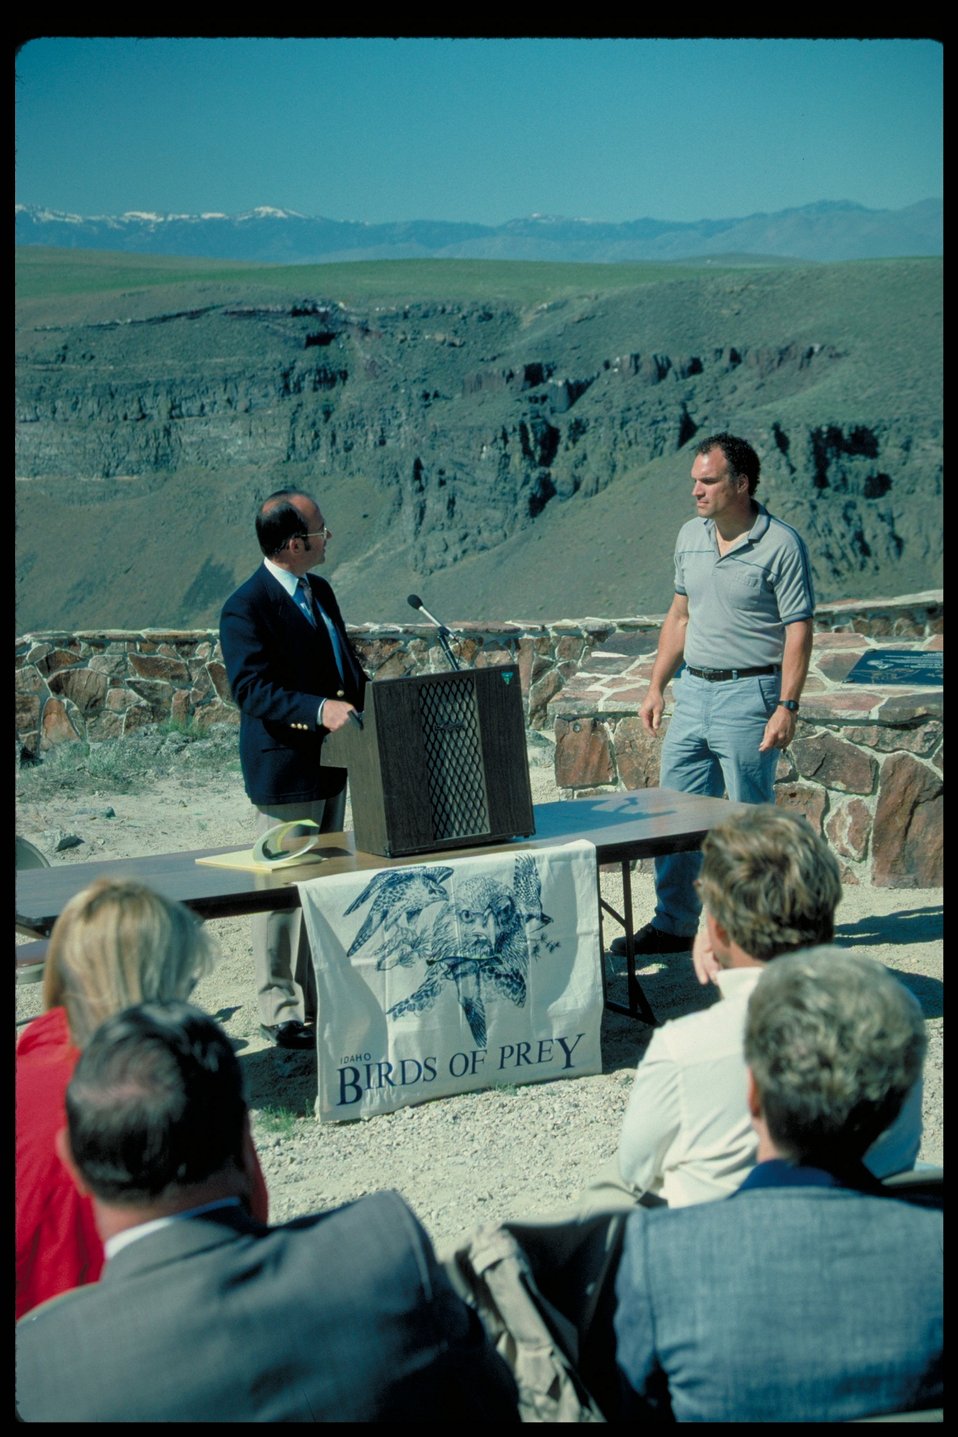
Birds of Prey National Conservation Area BOP Owyhee Field Office LSRD Lower Snake River District